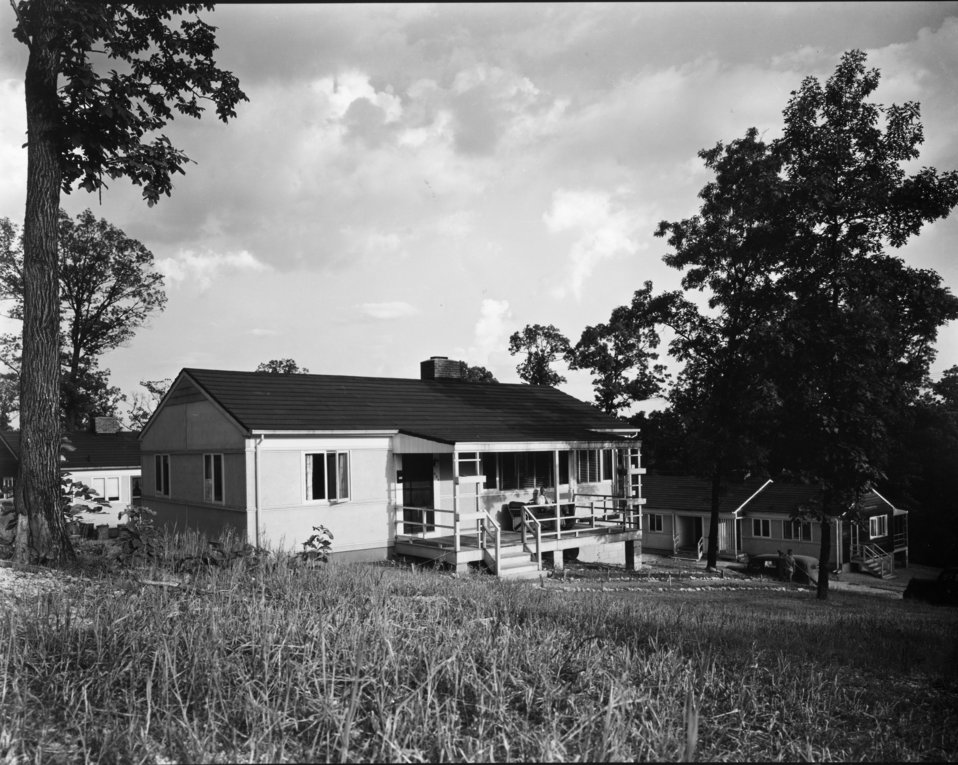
Housing at Oak Ridge